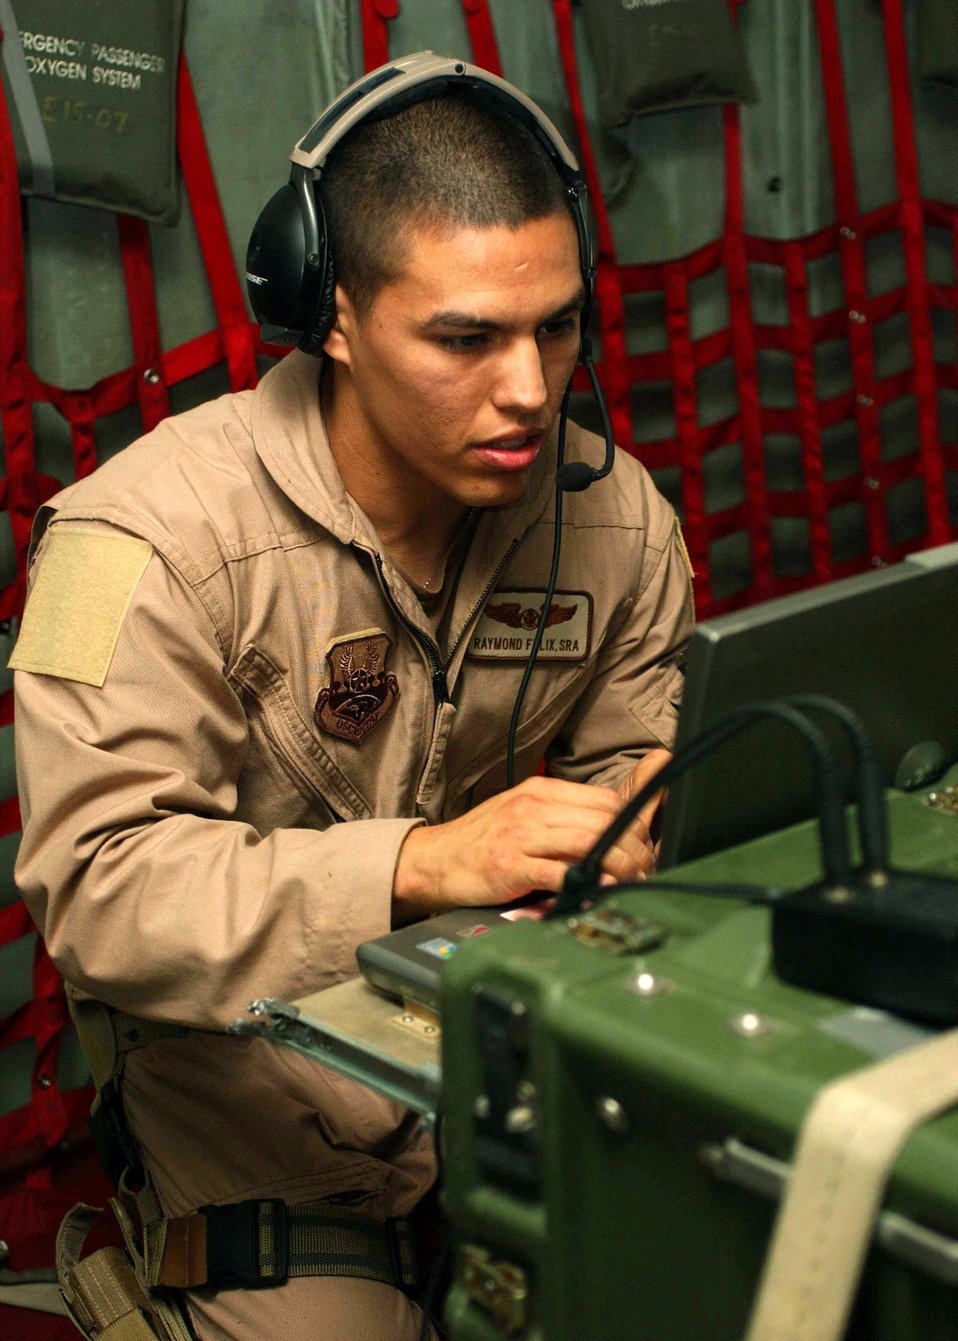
Airborne staff connects ground forces

Senior Airman Raymond Felix checks over his communications gear before taking off on a Joint Airborne Battle Staff mission over Iraq. While they fly, joint service battle staff members monitor several radio channels at a time, listening in on coalition convoys on the ground and relaying radio calls when necessary, ranging from routine radio checks to medical evacuation requests. Airman Felix is a communications technician with the battle staff.